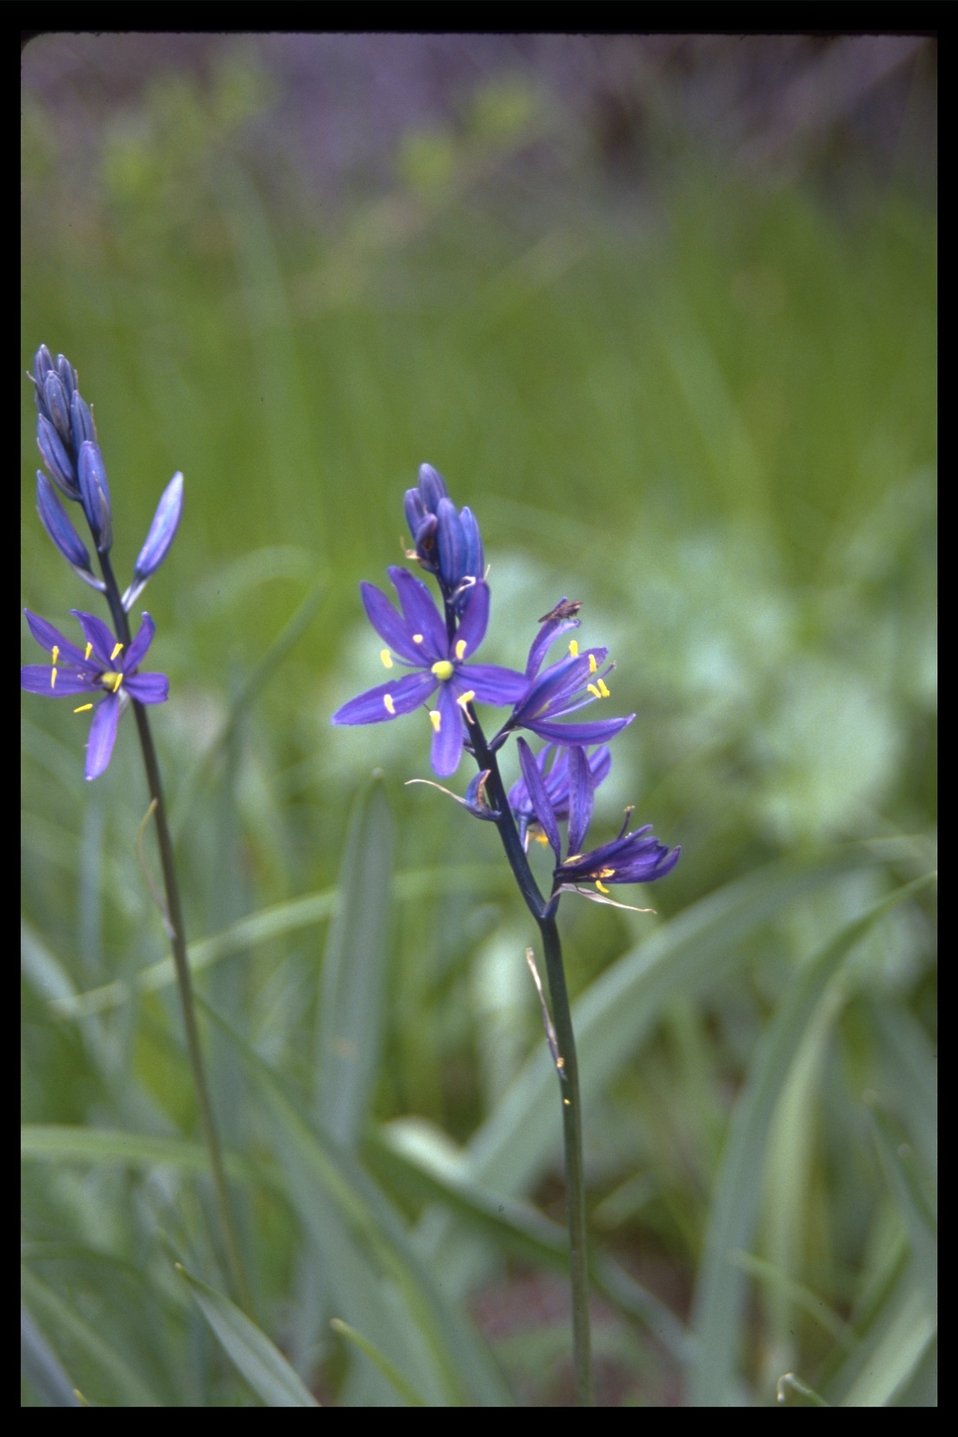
Camas Lily found at Malhuer/Bluebucket WSA. (WSA 2-14)